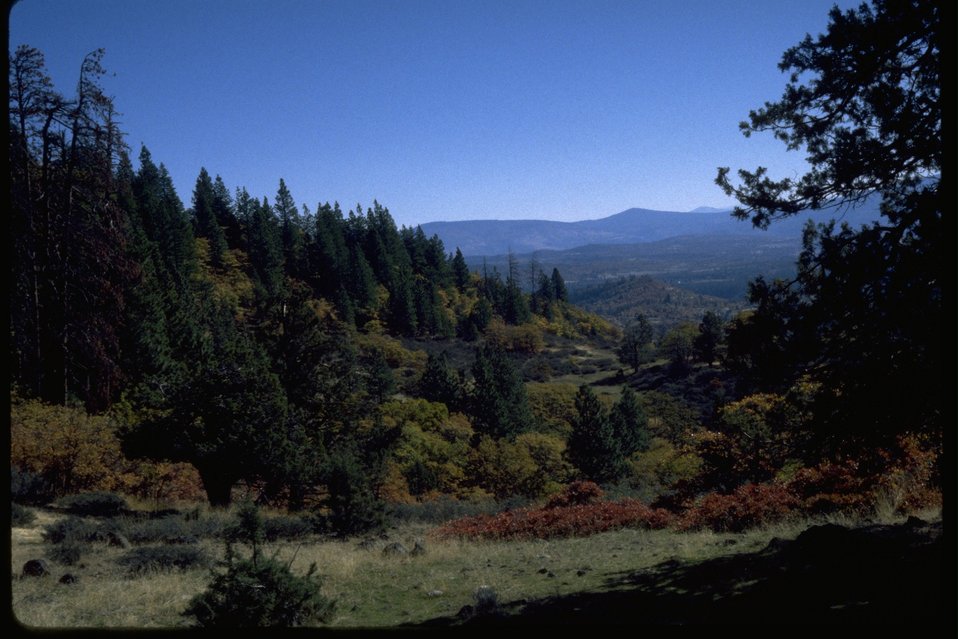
Fall Creek Ranch from the east end of Keene Creek Ridge.